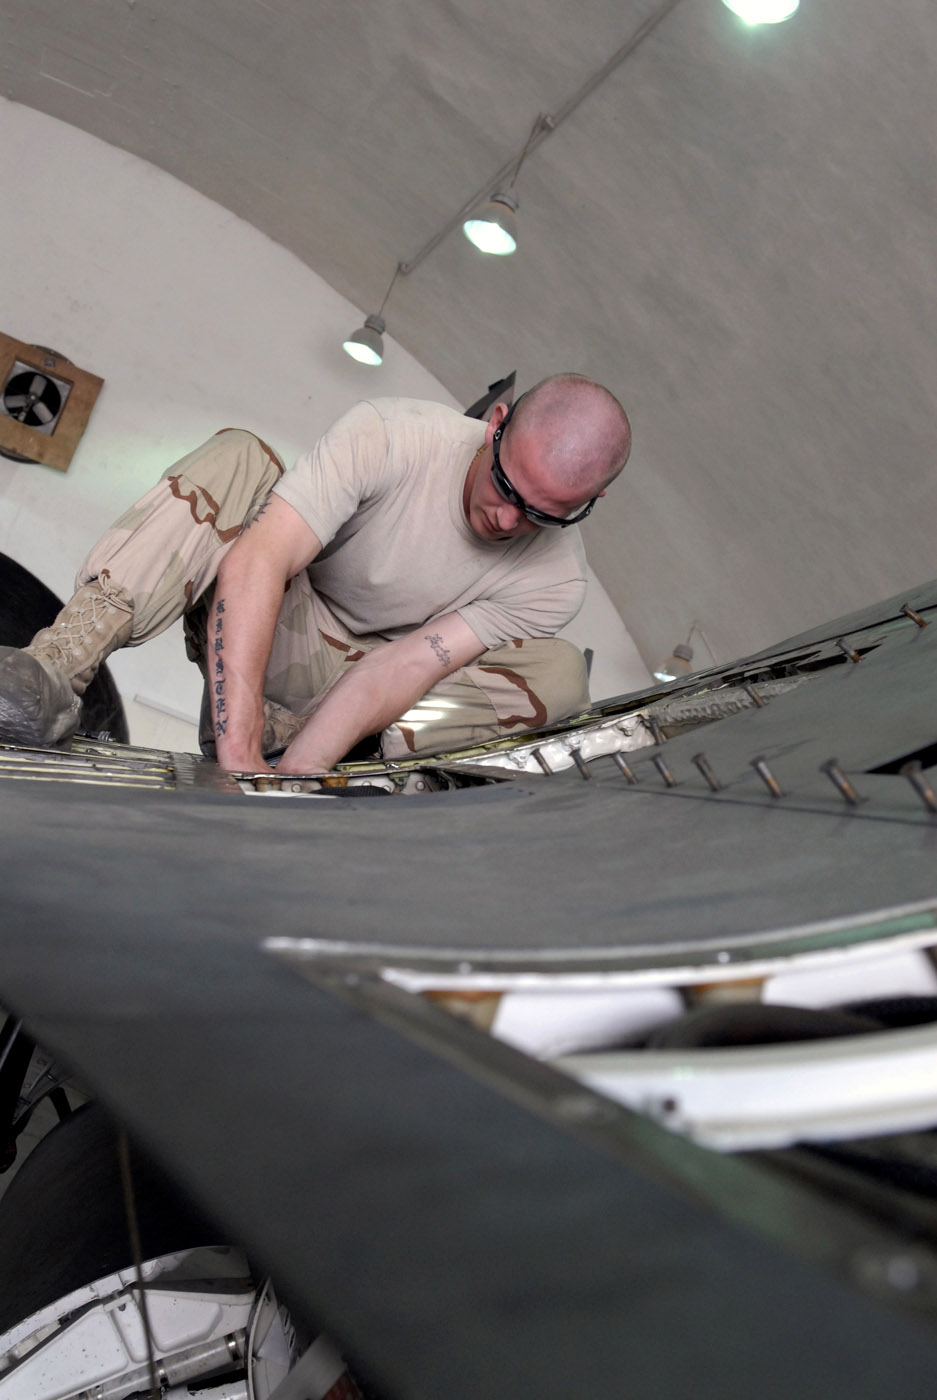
All in a day's work

Airman 1st Class Jason McBride secures an emergency power unit to an F-16 Fighting Falcon Oct. 10 at Balad Air Base, Iraq. The EPU is used to run accessories on the aircraft as well as serve as a backup power unit. Airman McBride is assigned to the 332nd Expeditionary Maintenance Squadron.